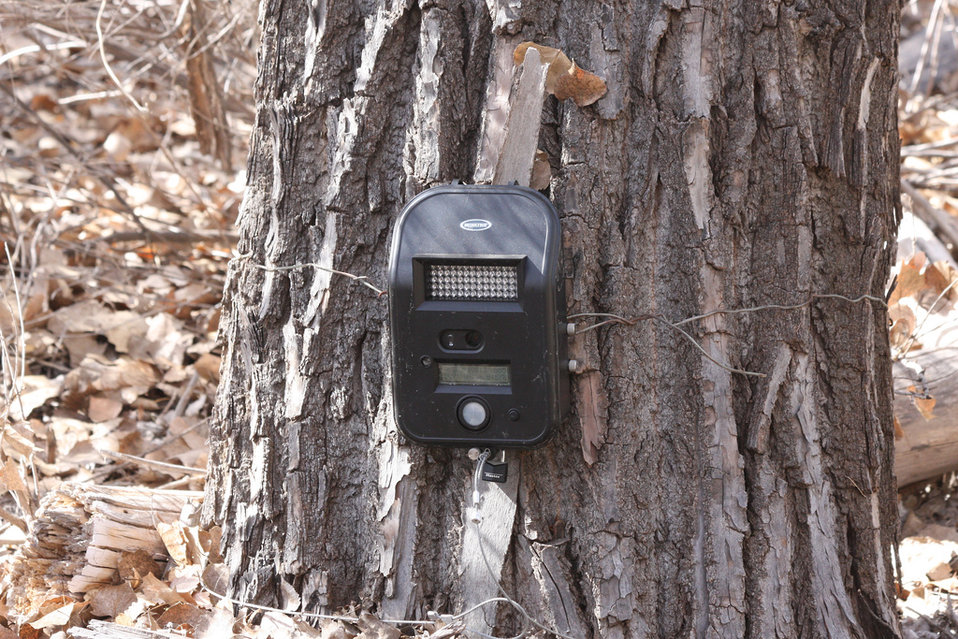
camera on cottonwood tree

Bosque del Apache National Wildlife Refuge, NM
Camera trap project by Matthew Farley, Jennifer Miyashiro and James Stuart
Photo made available by J.N. Stuart, Creative Commons